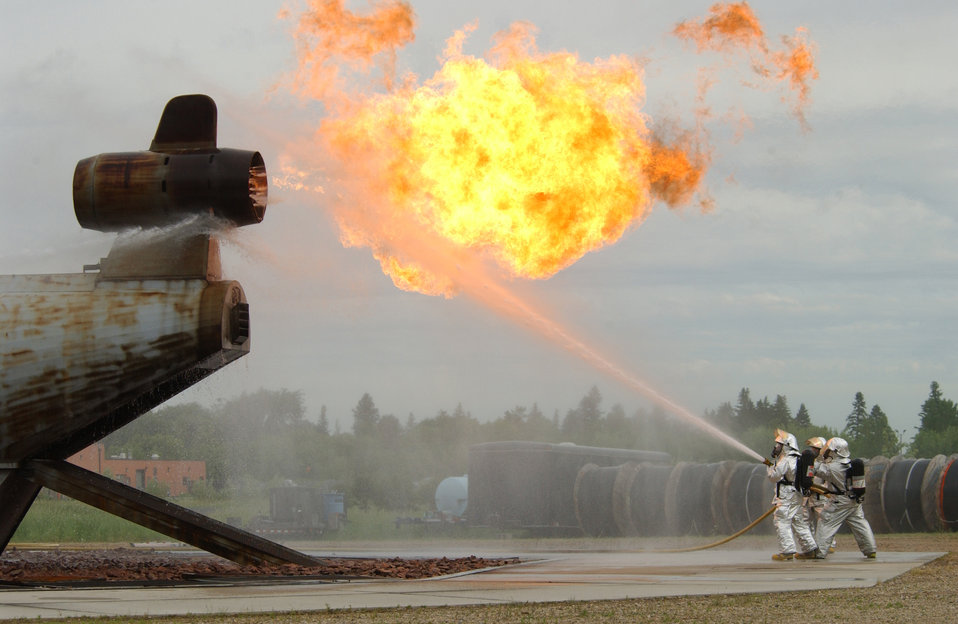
Light my fire

FARGO, N.D. -- A team of fire fighters from the 185th Civil Engineer Squadron spray water during a mock aircraft burn at a training site here June 15. The burning mock aircraft is used to provide annual training for fire fighters from all over the United States. The firefighters are members of the Iowa Air National Guard.